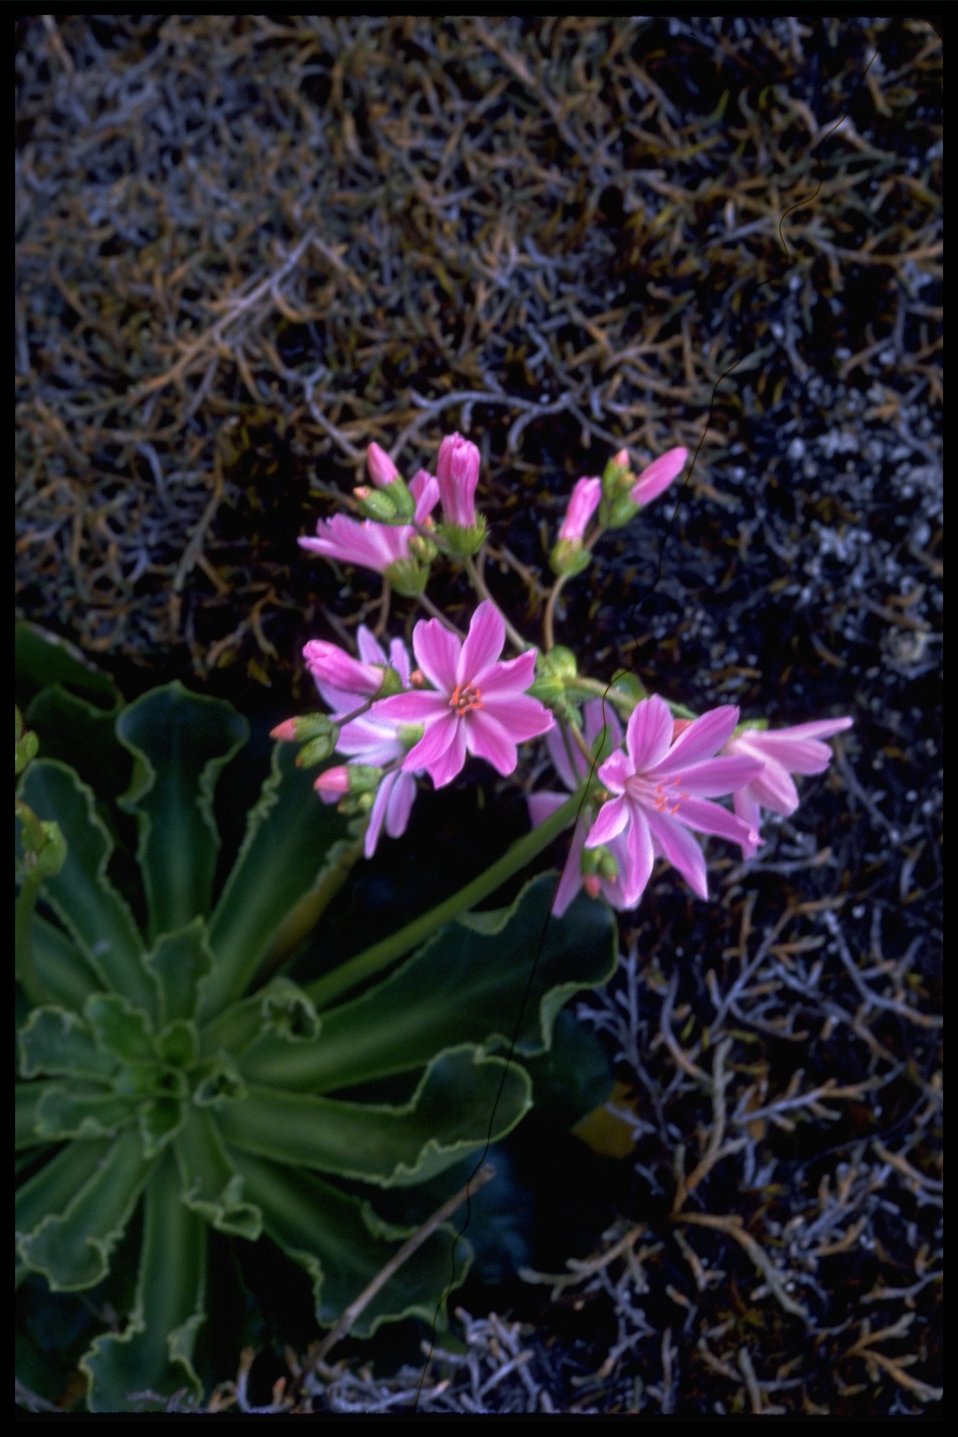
Lewisia cotyledon var. howellii, also commonly known as Imperial Lewisia.